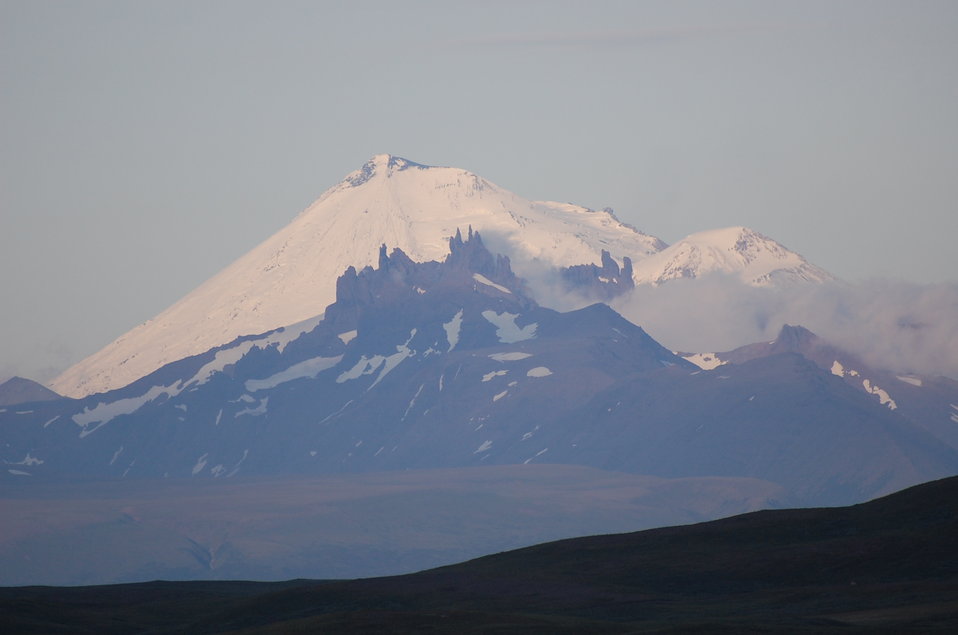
Aghileen Pinnacles and Pavlof Volcano

Volcanoes of the Alaska Peninsula